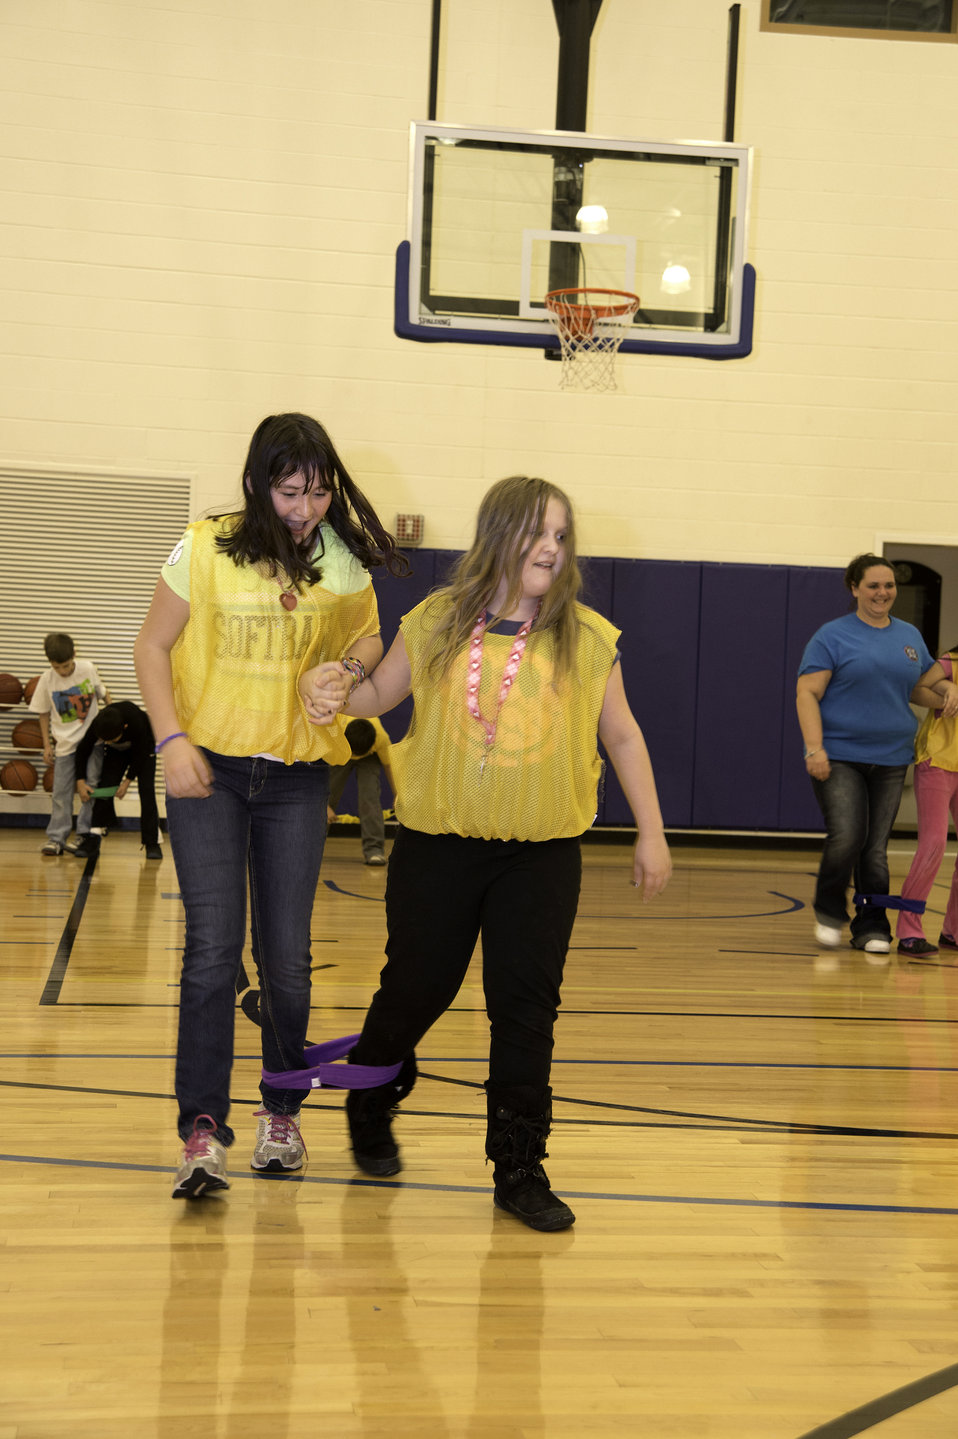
Mohegan youth enrolled in after-school program participate in physical activities at the Mohegan Tribe Community Center and Government Building in Uncasville, CT on Nov. 18, 2013. A U.S. Department of Agriculture (USDA) Rural Development (RD) Community Facility Loan was provided to the Mohegan Tribe for the construction of the Mohegan Tribe Community Center and Government Building in Uncasville, CT. USDA’s RD Community Facilities Programs makes and guarantees loans to develop essential community facilities in rural areas and towns of up to 20,000 in population. Loans and guarantees are available to public entities such as municipalities, counties, parishes, boroughs, and special-purpose districts, as well as to non-profit corporations and tribal governments. The 160,000 square foot building Center hosts an exhibit celebrating federal recognition, history of Mohegan Chiefs, a new Library and Archives space, new Arts and Crafts room, a new gymnasium, and a new community room to enjoy food and family. The Center will continue the Tribe’s plan for growth and meeting the needs of its members.